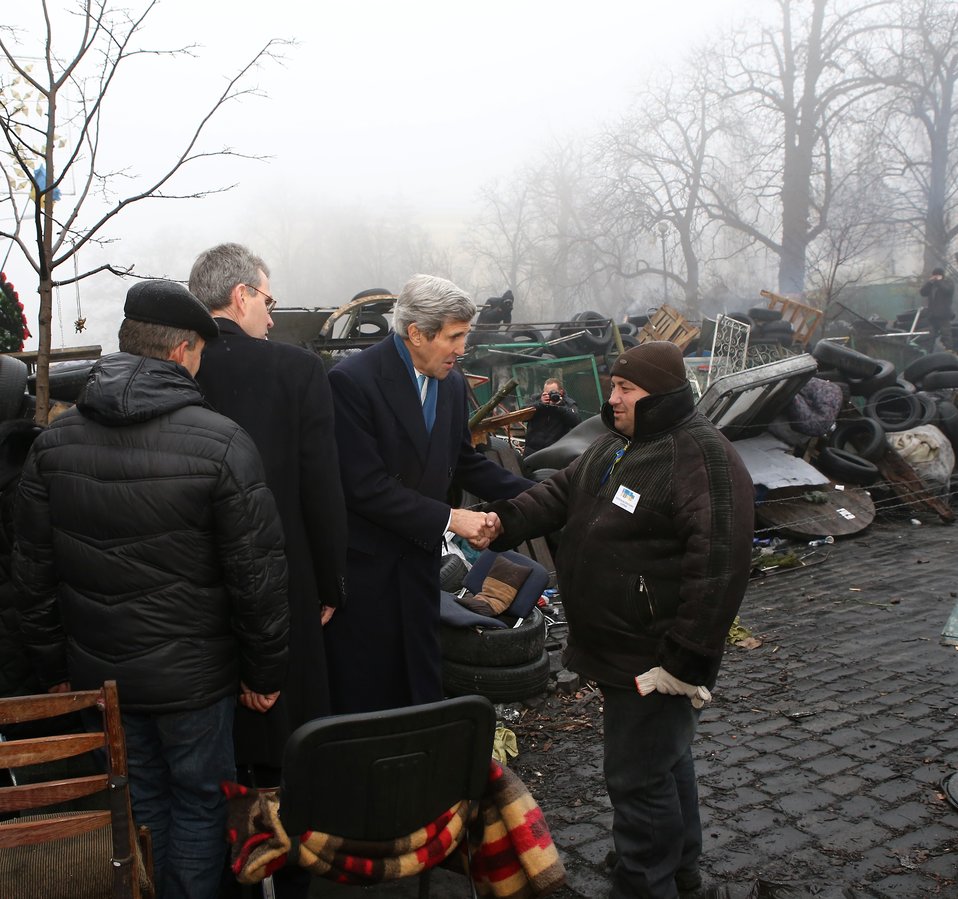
Secretary Kerry Speaks With a Ukrainian

U.S. Secretary of State John Kerry speaks with a Ukrainian near the Shrine of the Fallen in Kyiv, Ukraine, on March 4, 2014.